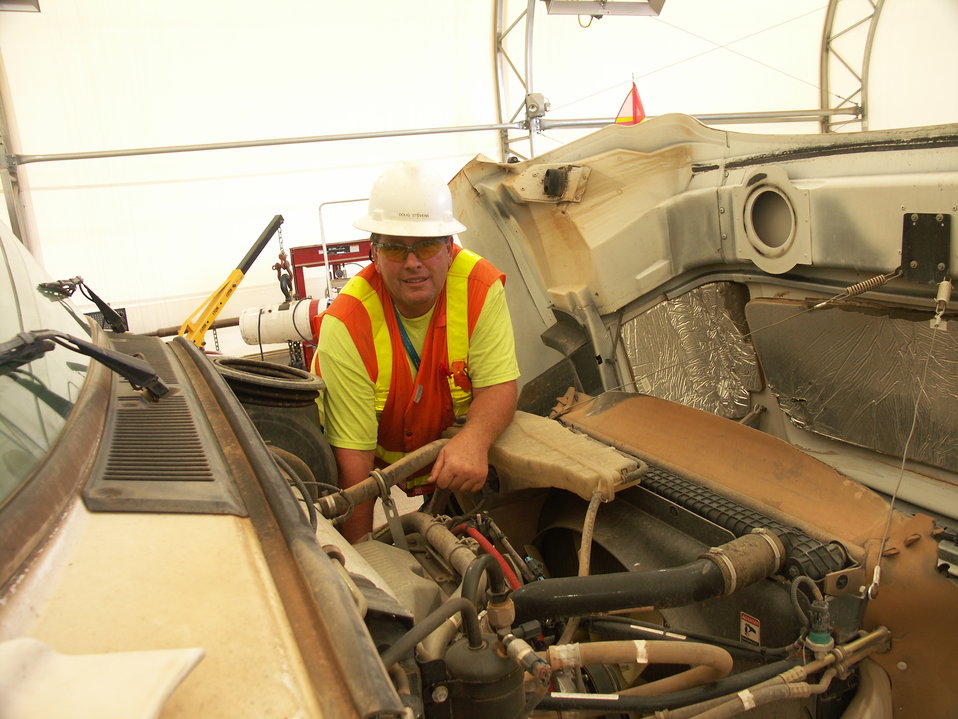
Doug Stevens works on a haul truck at the Moab site.